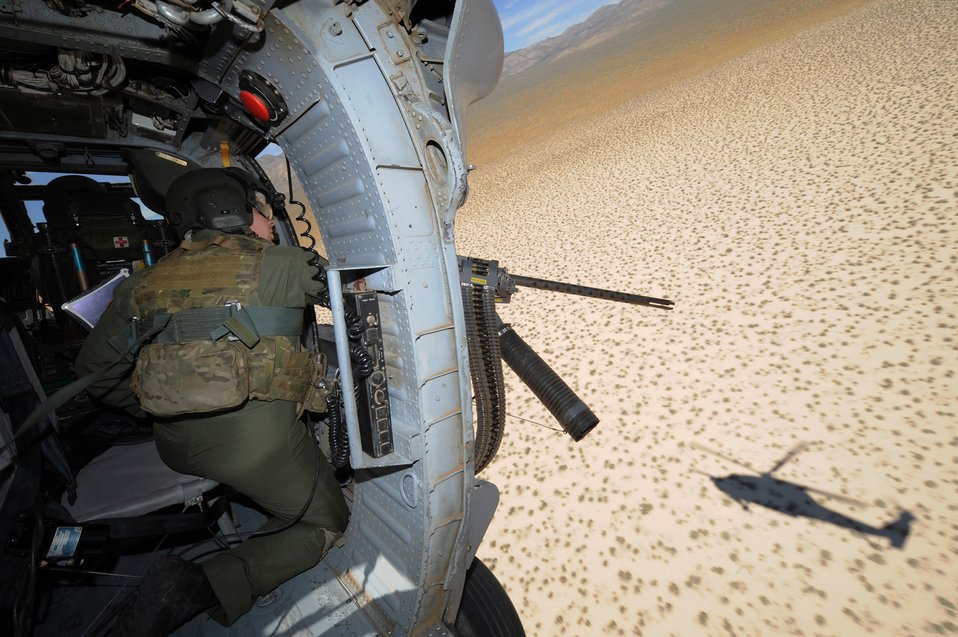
California Guard participates in firing mission

Staff Sgt. Andrew Gibson scans terrain for training targets from an HH-60 Pave Hawk during a fixed forward firing mission June 25, 2010, over the Nevada Test and Training Range. Sergeant Gibson is a flight engineer assigned to the California Air National Guard's 129th Rescue Squadron at Moffett Field, Calif.